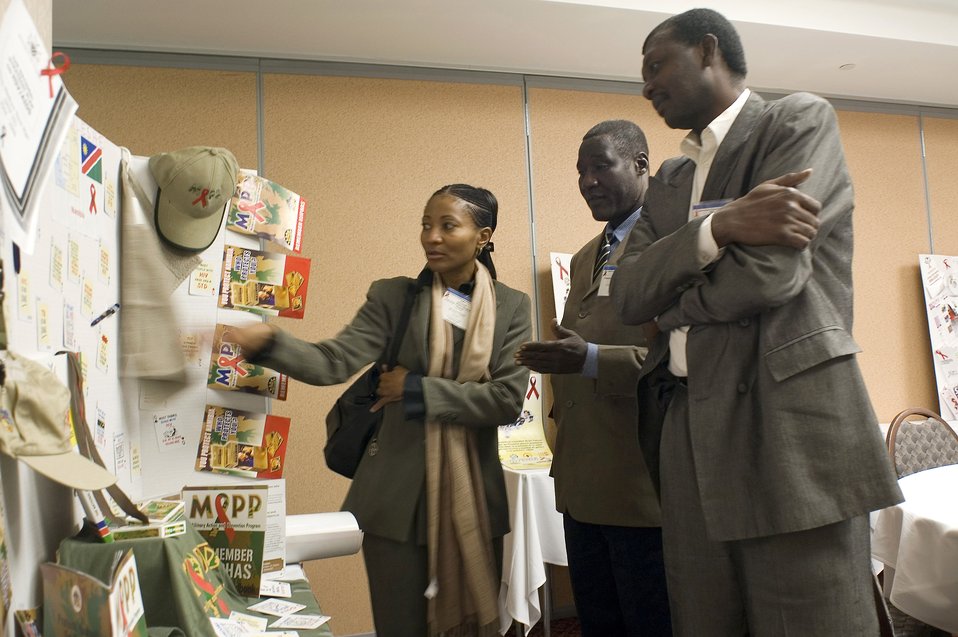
Military healthcare professionals join to combat global AIDS

Dr. Aune Naada, Capt. Arabi Ngnanga and Lt. Col. Bangatingar Nodjimbaye discuss AIDS/HIV statistics of African nations during the international HIV/AIDS Conference in San Antonio, Texas, Dec. 5. Dr. Naada is from Namibia and Capt Ngnanga and Colonel Nodjimbaye are from Chad. The conference is designed to help senior military leaders from various nations develop and implement effective HIV/AIDS prevention strategies in their countries.